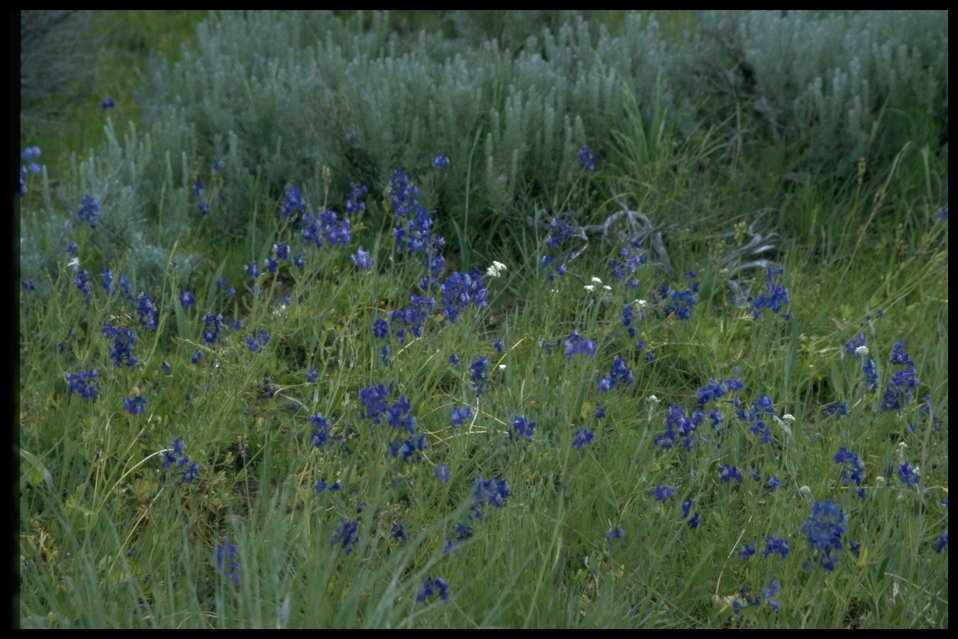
Medium shot of Larkspur in habitat.